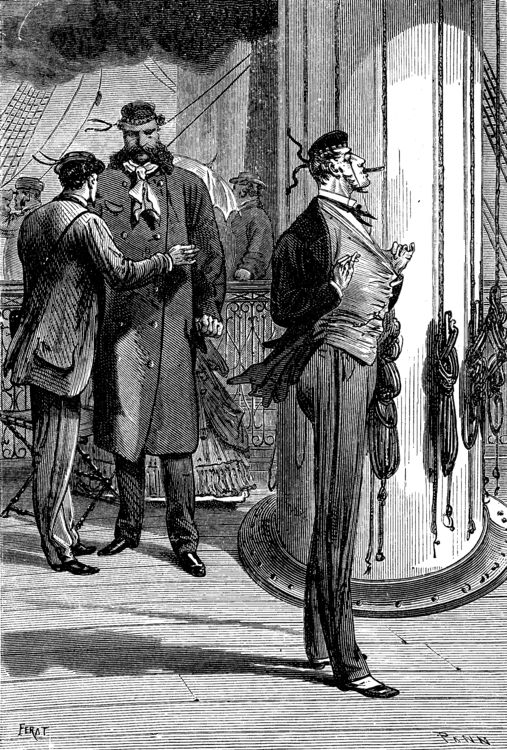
An illustration from Jules Verne's novel 'A Floating City' (1869) drawn by Jules Férat. Polski: Ilustracja powieści Juliusza Verne'a 'Pływające miasto' (1869) autorstwa Julesa Férata. Français : Jules Verne: 'Une Ville flottante' (1869), dessins par Jules Férat. Orginal text: Français : Il eut un geste de colère que j’arrêtai.